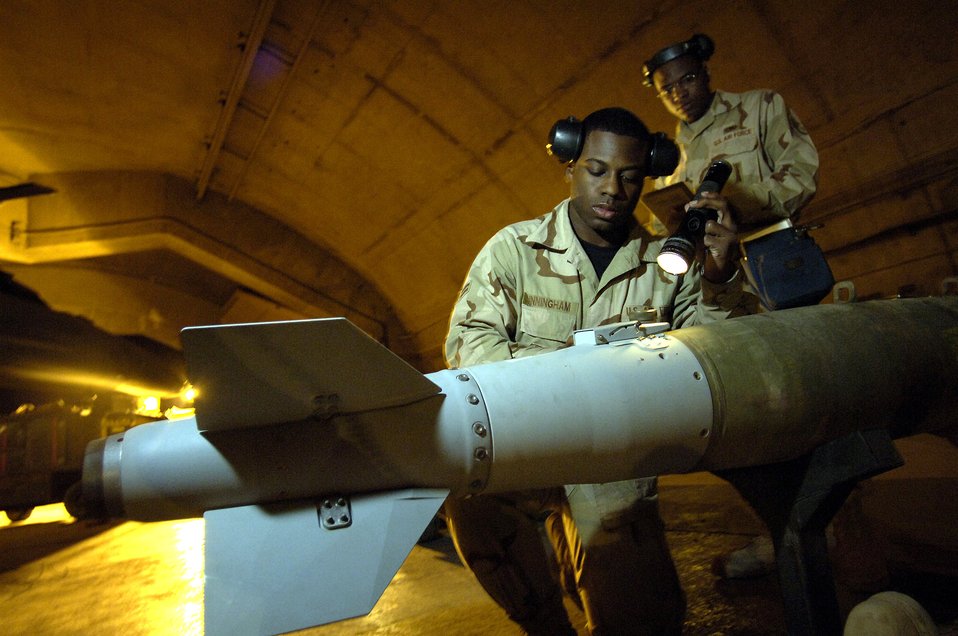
A call to arms

Staff Sgt. Christopher Curry and Airman 1st Class Brandon Cunningham prepare to load munitions on an F-16 Fighting Falcon at Balad Air Base, Iraq. The Airmen are assigned to the 332nd Expeditionary Aircraft Maintenance Squadron.